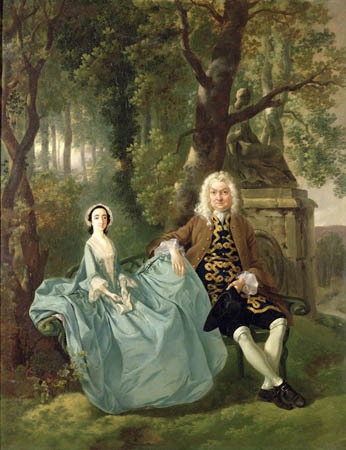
Thomas Gainsborough, Portrait of Mr and Mrs Carter of Bullingdon House, Bulmer, Essex (c. 1747-1748)